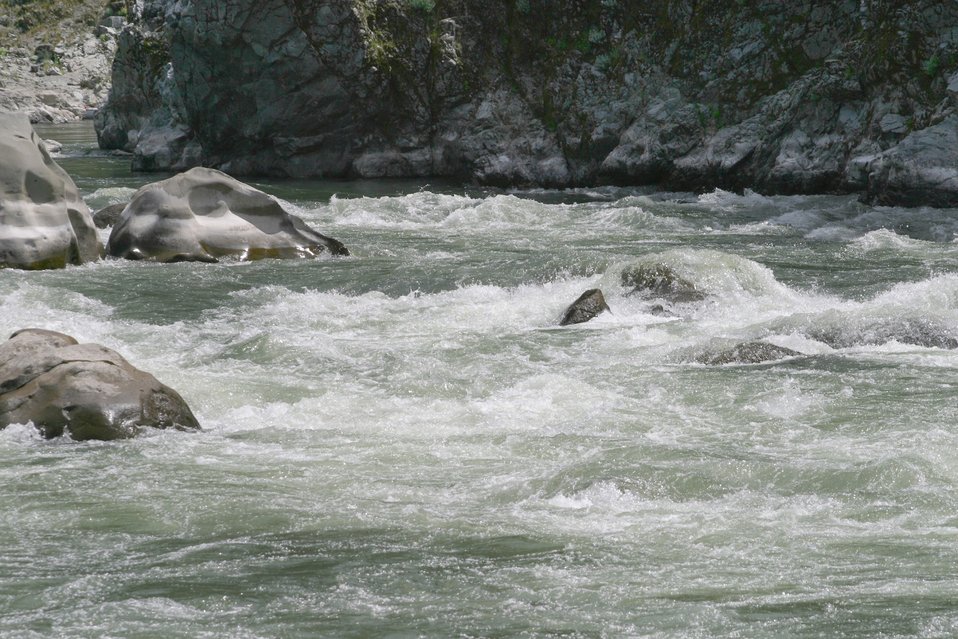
Wild section of the Rogue River from Grave Creek to Foster Bar May 19 to May 22.